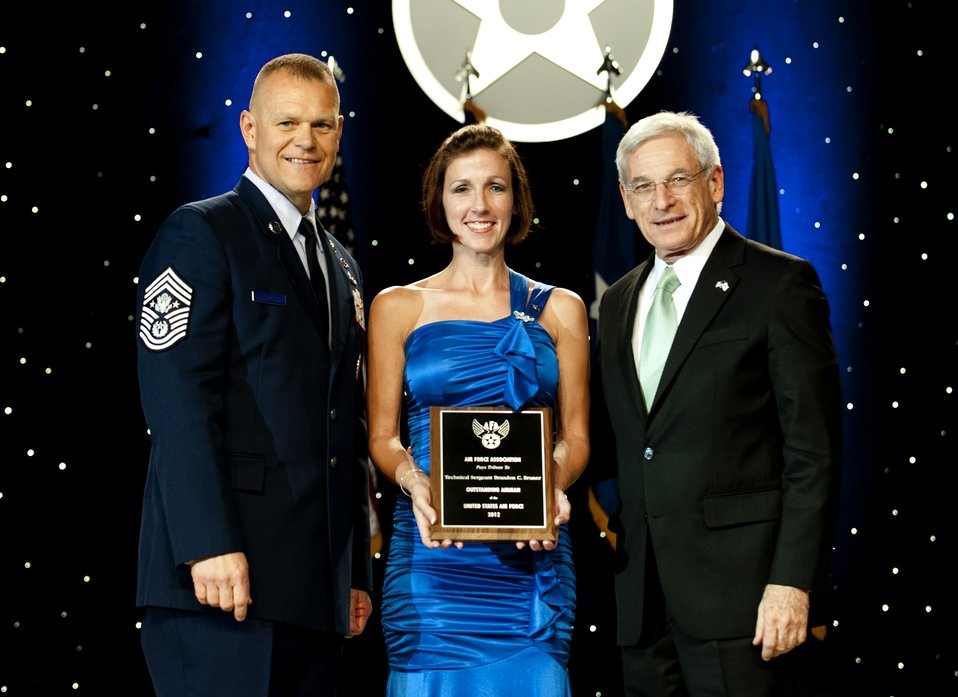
12 Outstanding Airmen of the Year

Chief Master Sgt. of the Air Force James Roy, left, and Sandy Schlitt, right, Air Force Association chairman of the board, present a plaque to Sara Bruner, who accepted the award on behalf of her husband Master Sgt. Brandon Bruner, during the 12 Outstanding Airmen of the Year reception and awards dinner in Washington, D.C., Sept. 17, 2012. The recipients were recognized for superior leadership, job performance, community involvement and personal achievements.